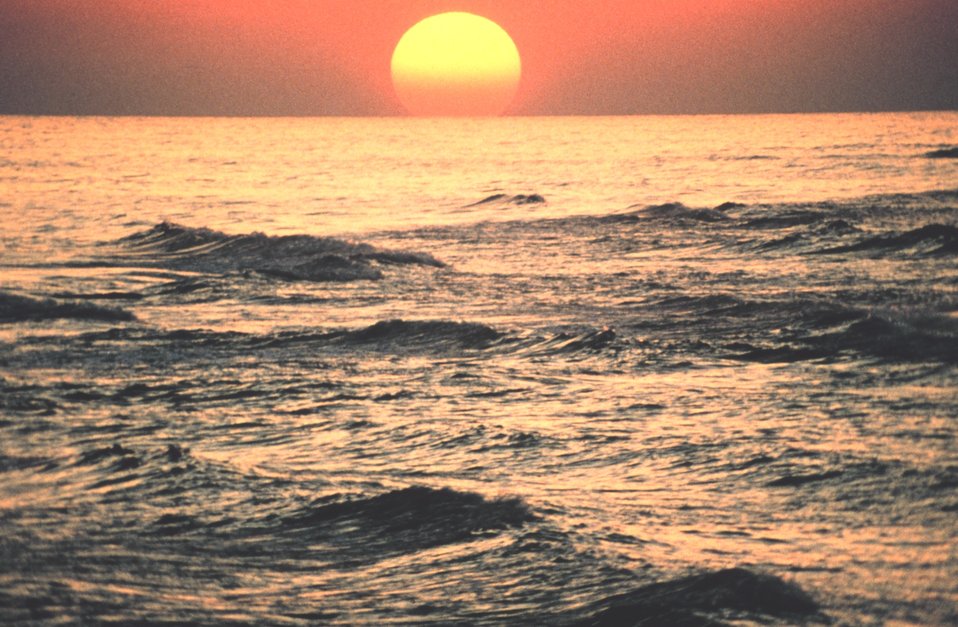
A winter sunset from the Pensacola Beach fishing pier.